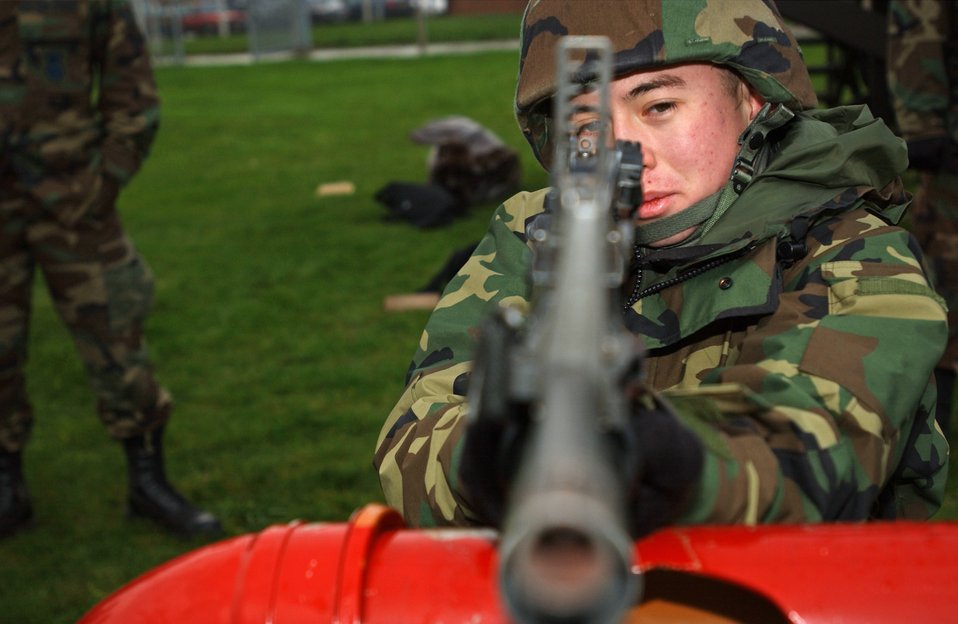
Take aim

ROYAL AIR FORCE LAKENHEATH, England -- Airman 1st Class Frank Irvin aims a grenade launcher at a practice target here recently. Airman Irvin is assigned to the 48th Security Forces Squadron.